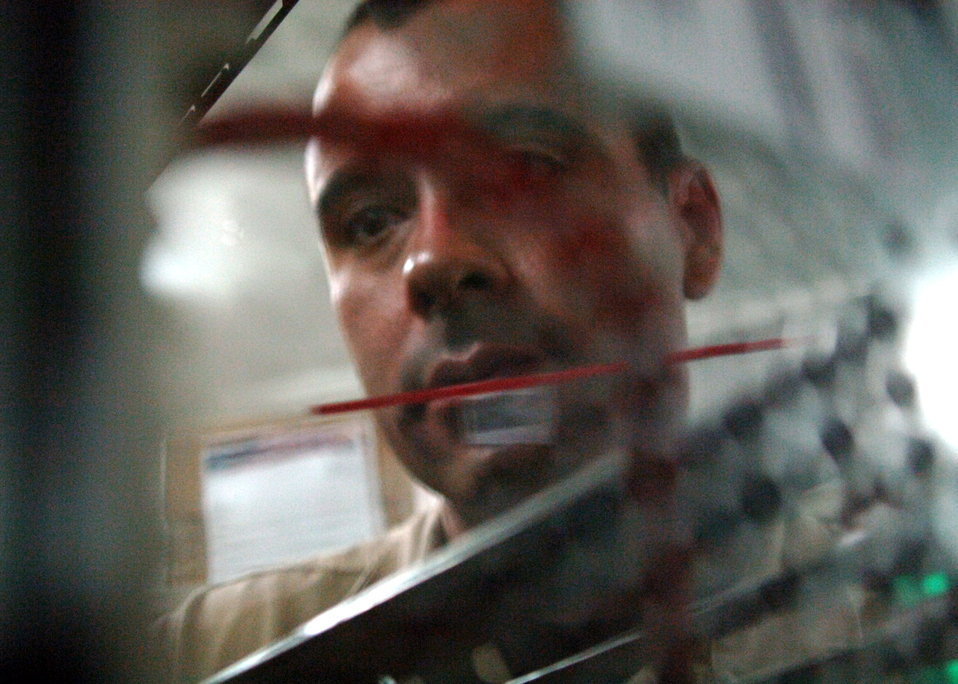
Communications Airmen make the connection

Staff Sgt. Mark Rodriguez cleans and troubleshoots computer equipment at Al Asad Air Base, Iraq. He deployed from the 71st Communications Squadron at Vance Air Force Base, Okla., and is assigned to the 438th Air Expeditionary Group. Sergeant Rodriguez is a computer systems specialist.